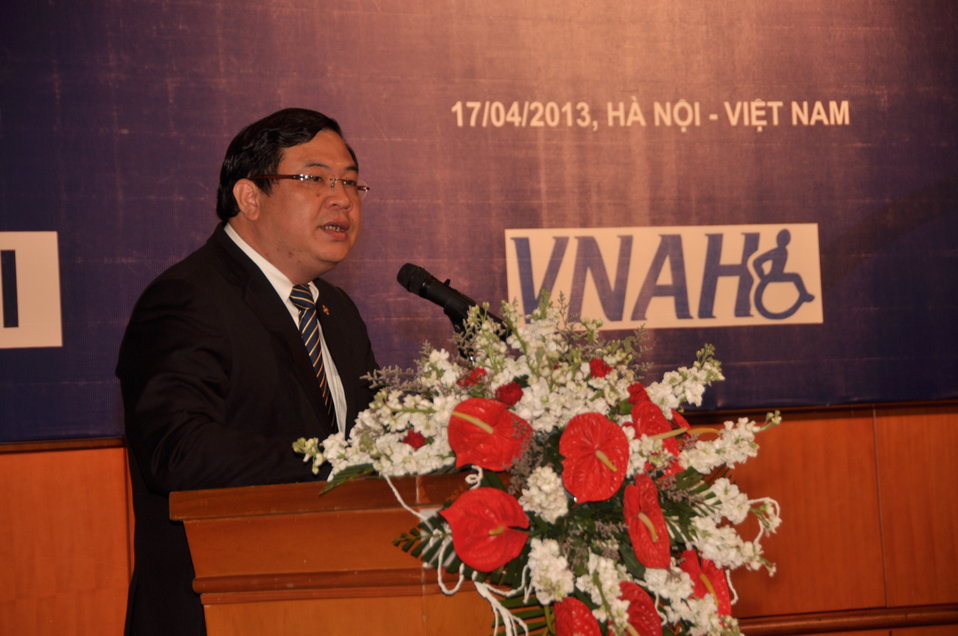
Blue Ribbon Employers Council Awards

Hanoi, April 17, 2013